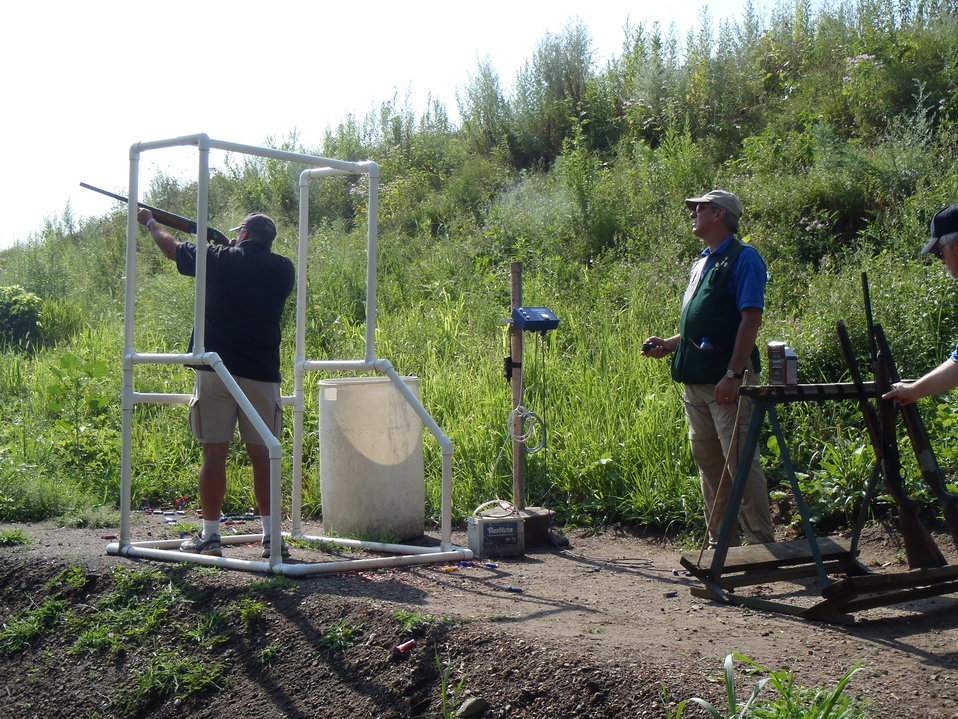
Refuges supervisor Jim Leach shoots, while Regional Director Tom Melius records time.